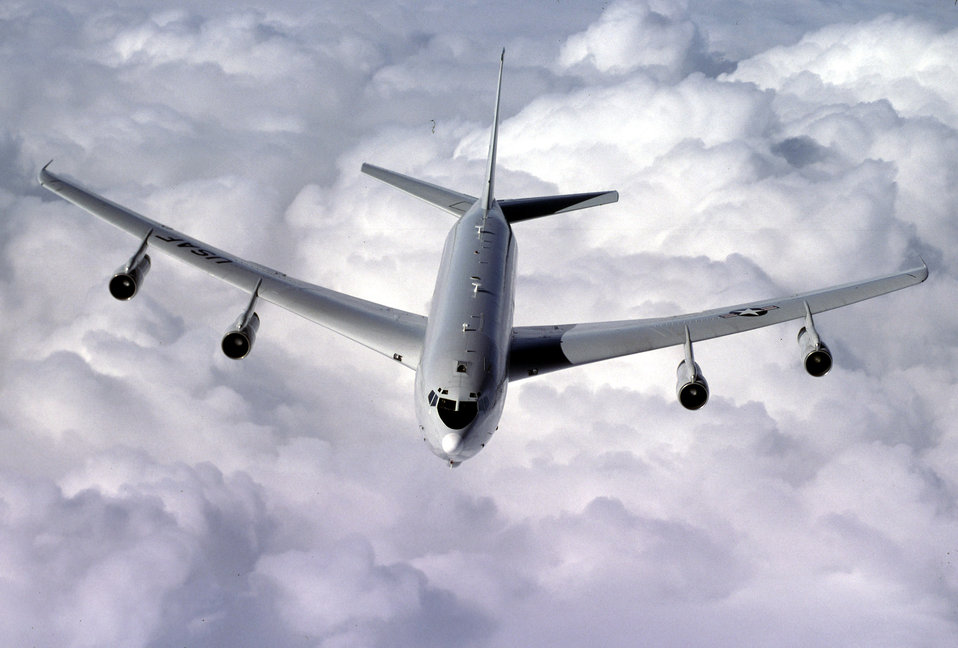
Joint Stars

ROBINS AIR FORCE BASE, Ga. -- An E-8C Joint Surveillance Target Attack Radar System from the 93rd Air Control Wing flies a refueling mission over the skies of Georgia. The Department of Defense will soon deploy Joint STARS and Global Hawk unmanned aerial vehicle surveillance systems over the Afghan theater of operations in support of Operation Enduring Freedom. The E-8C is an airborne battle management and command and control platform that conducts ground surveillance to develop an understanding of the enemy situation and to support attack operations and targeting that contributes to the delay, disruption and destruction of enemy forces.